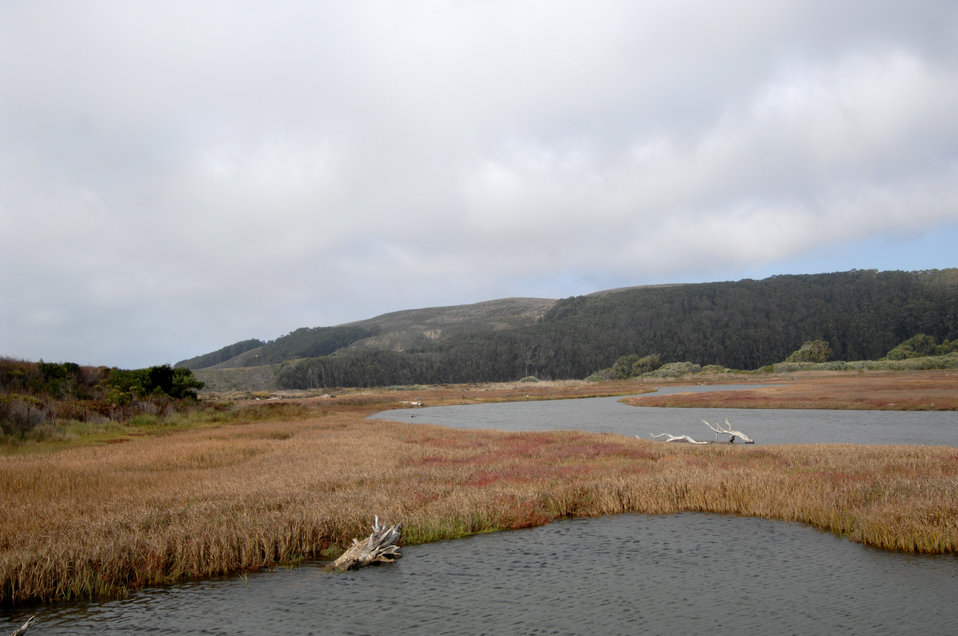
Pescadero Watershed 2

Pescadero lagoon is an extremely complex ecosystem, with eight special status plant species, ten wildlife species and two stream corridors. There are three federal threatened species: the Central California Coast steelhead, the California red-legged frog, and the Western snowy plover. There are two federal endangered species: the tidewater goby and the San Francisco garter snake. In addition, the Western pond turtle is the only native turtle in California and it is listed as a Species of Concern by the California Department of Fish and Game.
Although coho salmon are not currently found in the Pescadero Creek watershed, the watershed, including the lagoon, is designated critical habitat for this species.